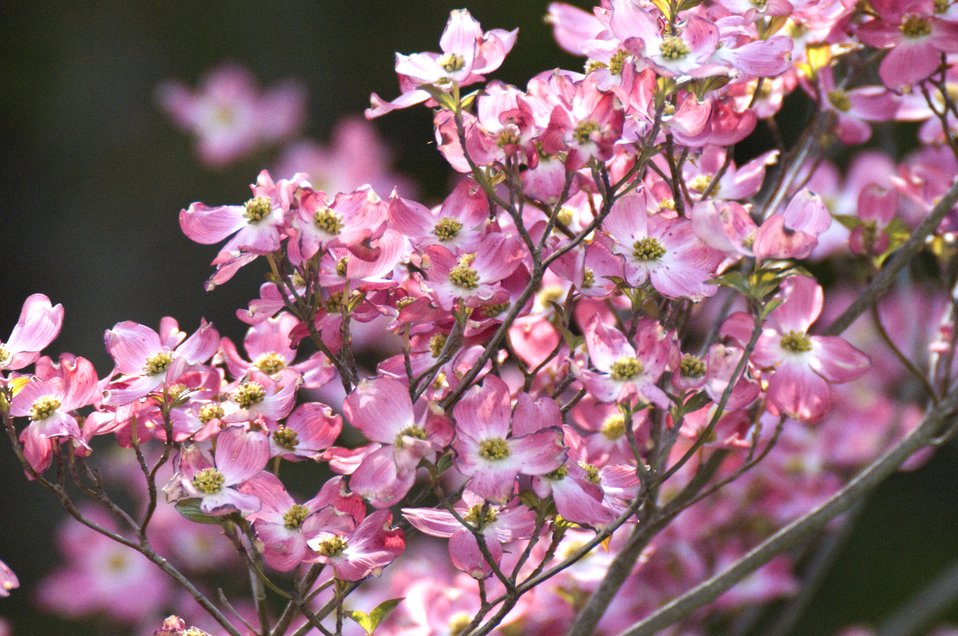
Nature science at Brookhaven National Laboratory.